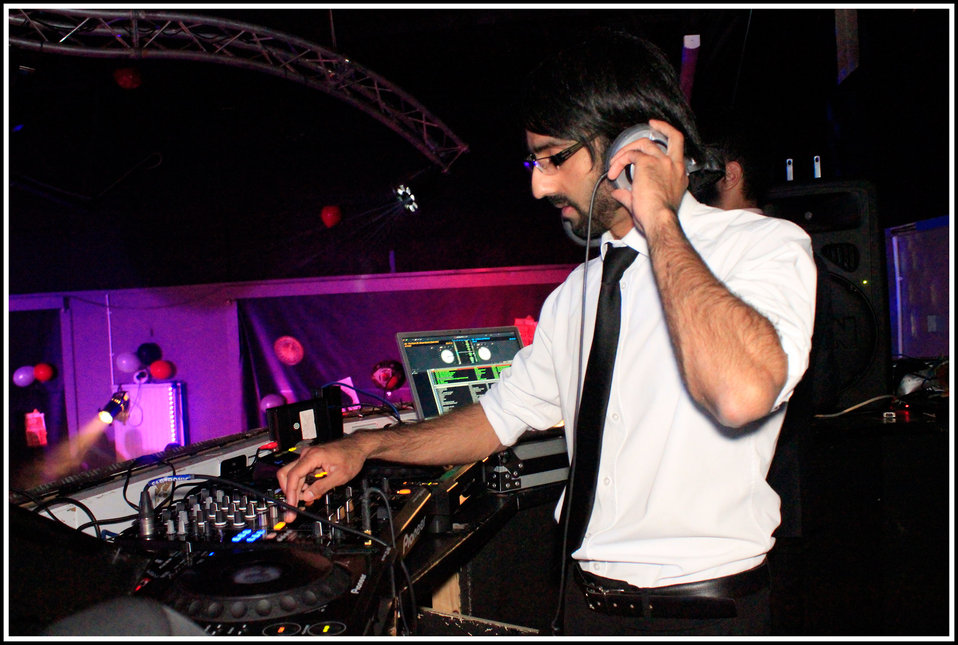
Dj at work

Taken at the event with popular music.